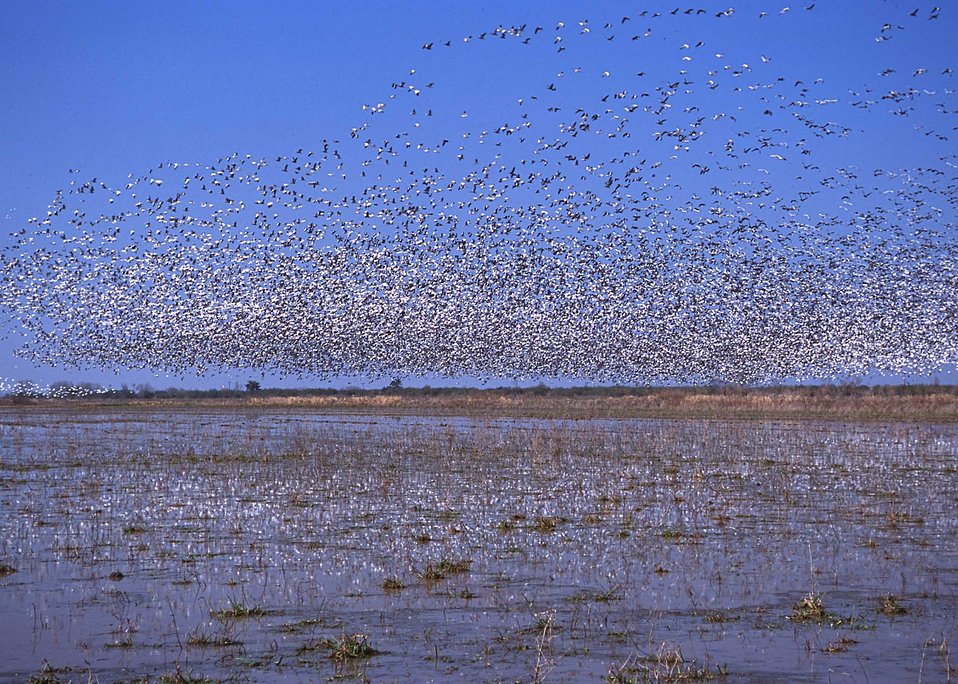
Flooded croplands near Gueydan, Louisiana attract thousands of geese in the winter.